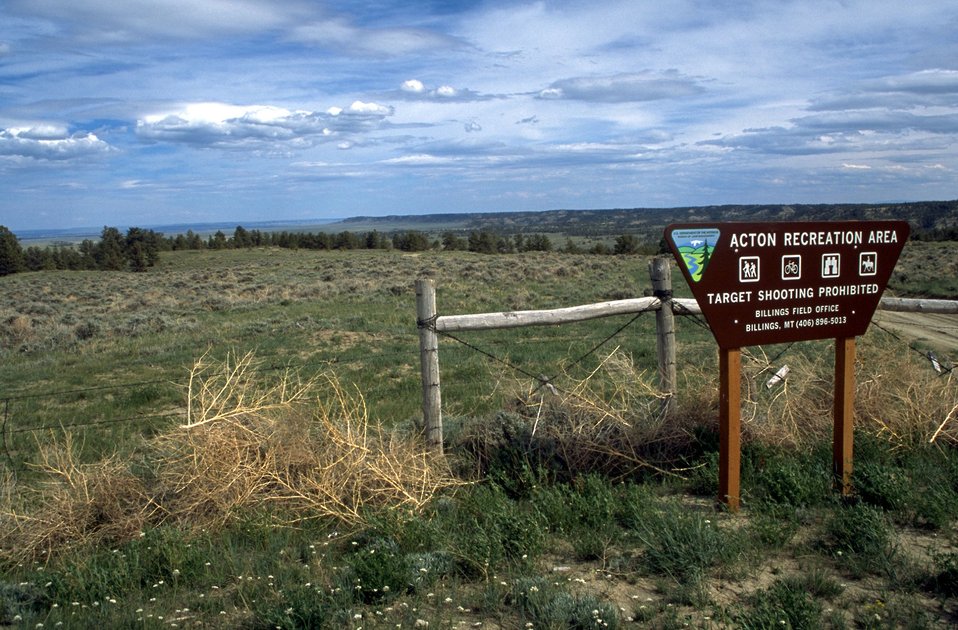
Entrance sign to the Acton Recreation Area